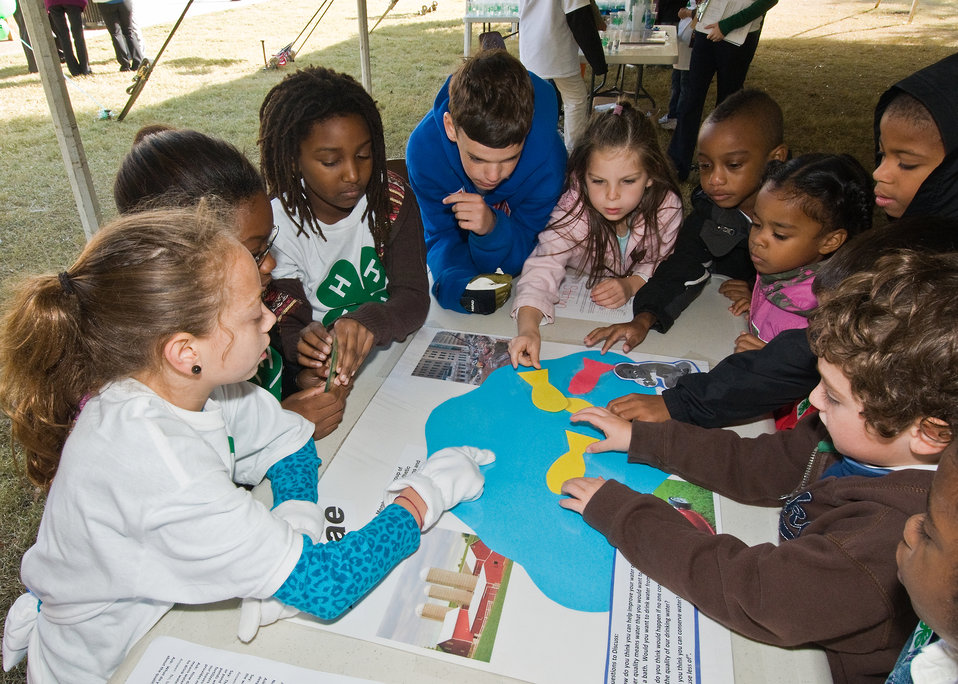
Carolina Bayon (left) a fifth grade student at Hearst Elementary School in Washington, DC, explains the effect of algae on water quality to second grade students. The experiment was part of the 4-H National Youth Science Day, National Science Experiment, 4-H2O, Tuesday, October 6, 2010. Students learned about the importance of water quality and its impact on the environment with experiments to discover how to reduce their carbon footprint. USDA Photo 10di1518-8 by Bob Nichols.